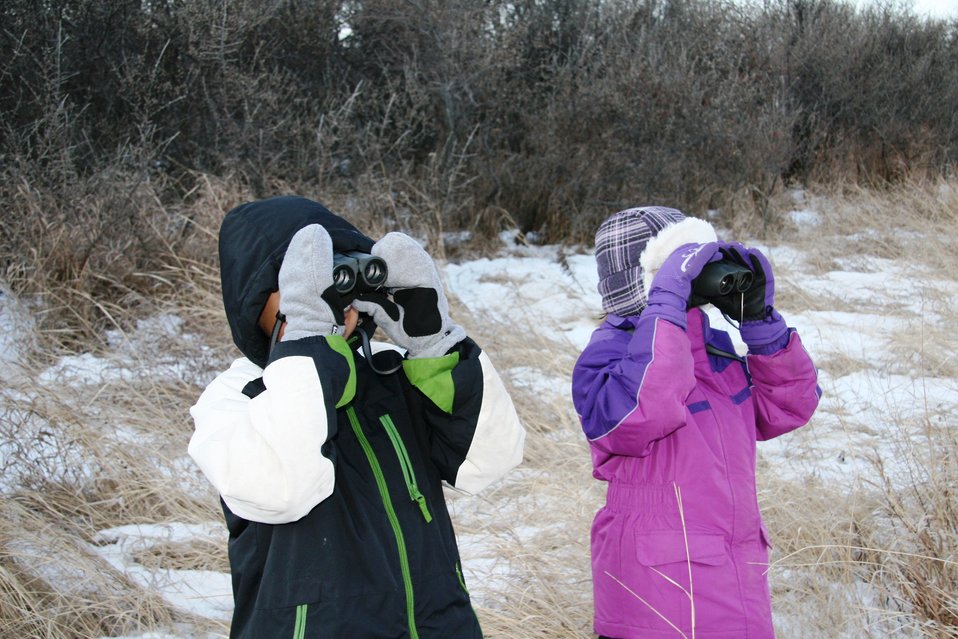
CBC4kids

Testing out their binoculars and looking for birds.